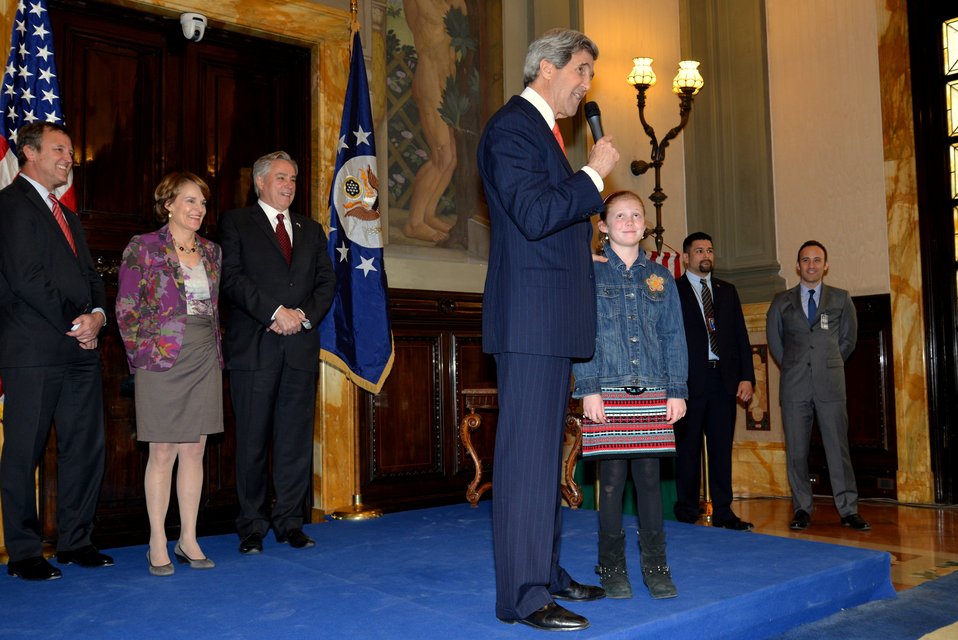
Secretary Kerry Speaks With Tri-Mission Rome Staff and Families

U.S. Secretary of State John Kerry speaks with staff and families of Tri-Mission Rome -- the U.S. Embassy in Rome, Italy; the U.S. Embassy to the Holy See; and the U.S. Mission to the UN Agencies -- in Rome, Italy, on February 28, 2013.